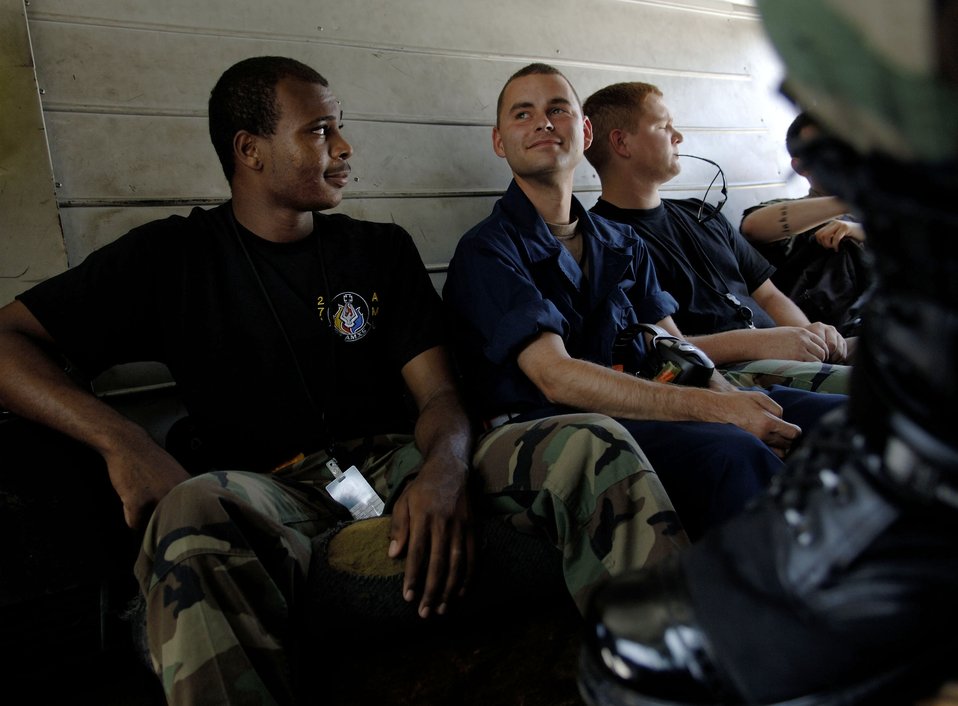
Raptor crews

(From left) Airman 1st Class Zachary Pace, Senior Airman Christopher Winfrey and Staff Sgt. Shaun Helmick travel in the back of the crew chief truck before aircraft launches at Langley Air Force Base, Va., on Aug. 15. The Airmen are F-22 Raptor crew chiefs assigned to the 27th Aircraft Maintenance Unit.